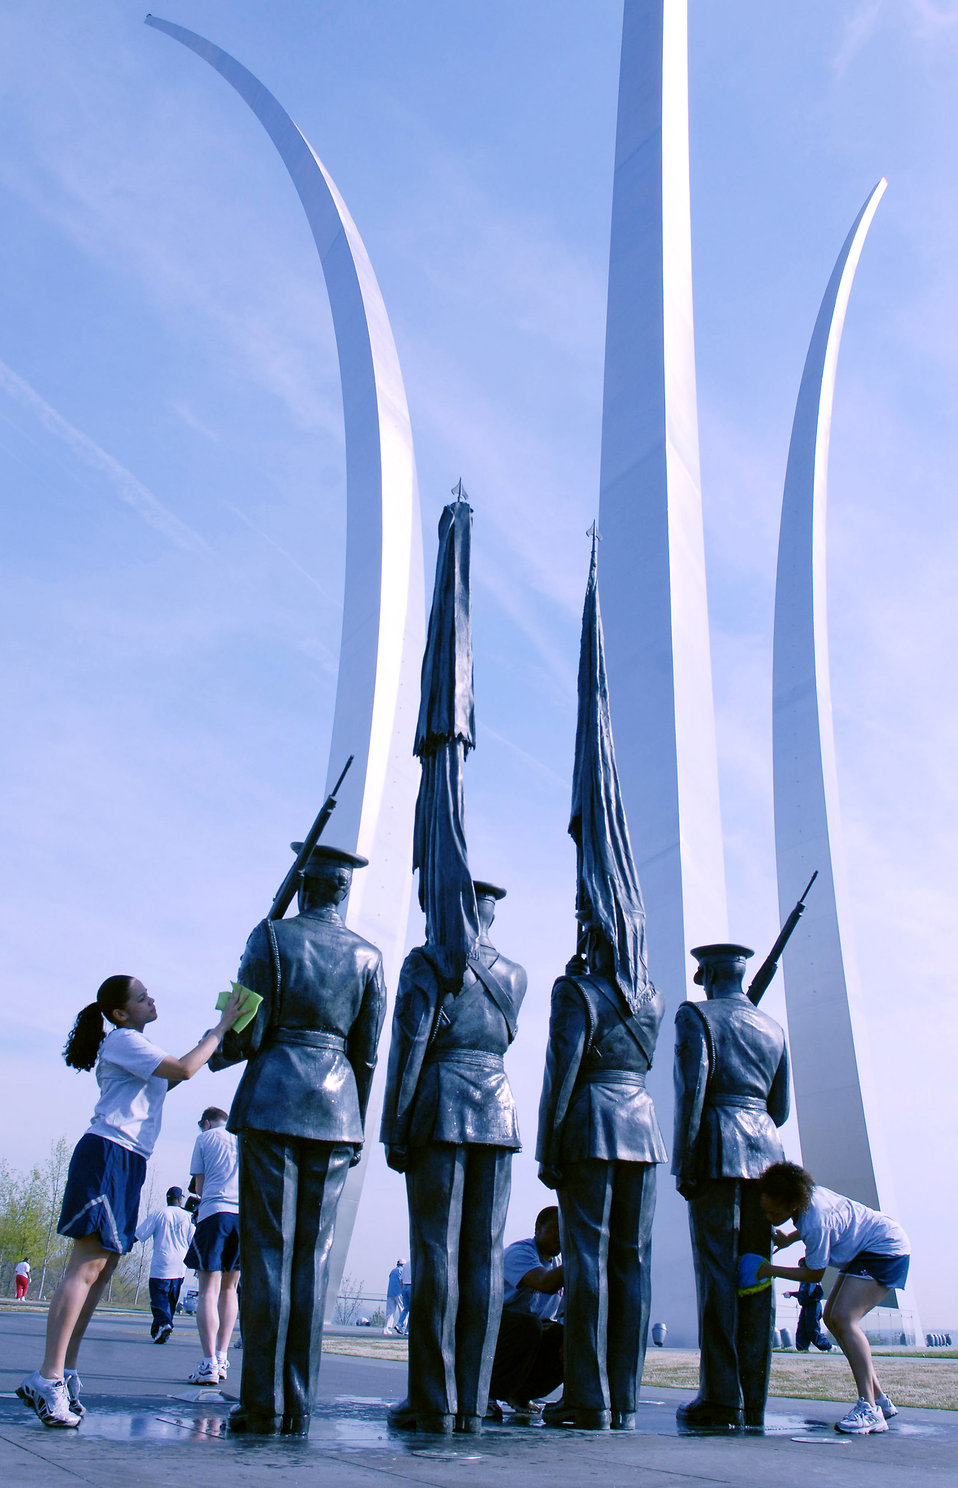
Sprucing up the Air Force Memorial

More than 50 volunteers from Air Force Sergeants Association Chapter 300 in Washington D.C. gathered on the grounds of the Air Force Memorial April 19 to help spruce up the site. Dedicated on Oct., 14, 2006, the memorial honors the service and sacrifice of the men and women of the United States Air Force and its predecessor organizations. The wall bears the inscriptions of combat campaigns and expeditionary operations and contains the words of Air Force leaders that relate to the service's core values of Integrity First, Service Before Self and Excellence in All We Do. The memorial is located just outside the nation's capital in Arlington, Va., adjacent to Arlington National Cemetery and overlooking the Pentagon.